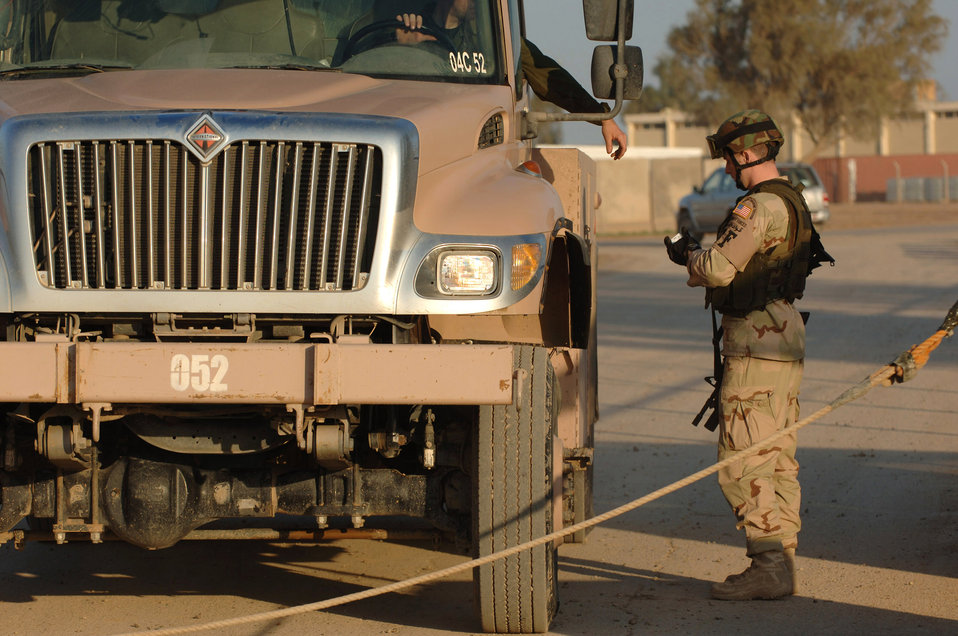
Security forces Airmen protect Iraq's combat airpower hub

Staff Sgt. Lawrence Reents checks identification before allowing a vehicle to pass through an entry control point Feb. 16 at Balad Air Base, Iraq. Sergeant Reents is assigned to the 332nd Expeditionary Security Forces Squadron.